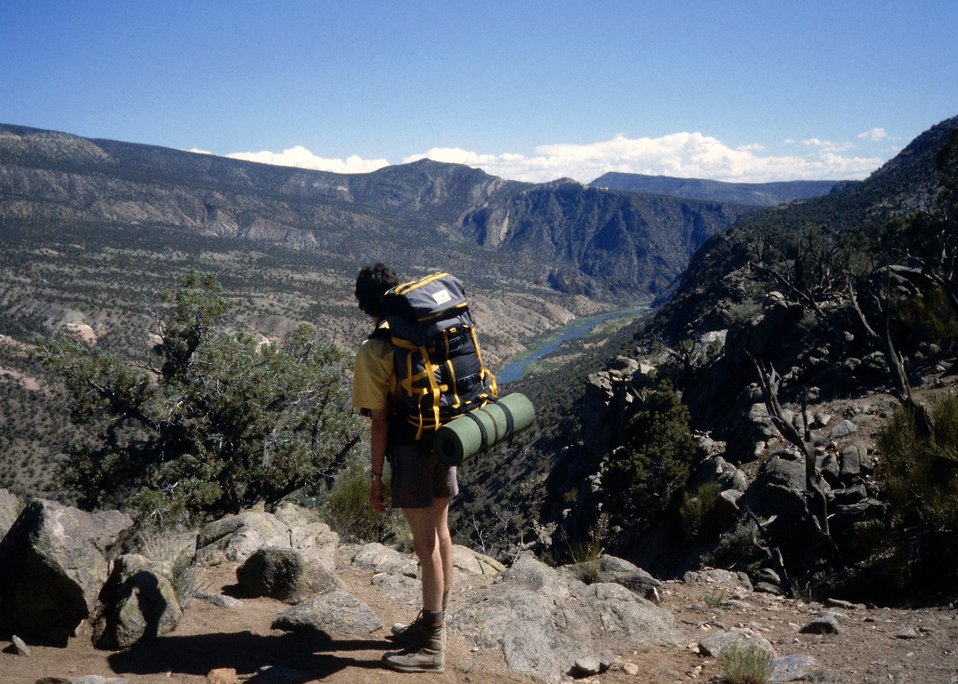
Hiker at over look